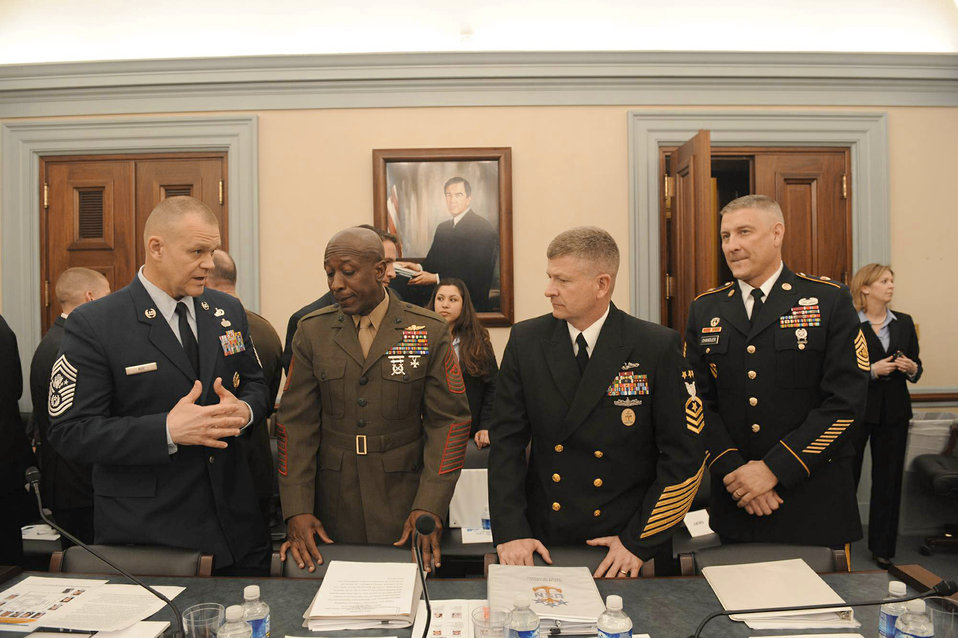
Chief Roy

The senior enlisted leaders from the Air Force, Marines, Navy and Army testify before the House Subcommittee for Military Construction, Veterans Affairs and Related Agencies March 30, 2011, in Washington. From left are Chief Master Sgt. of the Air Force James A. Roy, Sergeant Major of the Marine Corps Carlton Kent, Master Chief Petty Officer of the Navy Rick West and Sergeant Major of the Army Raymond Chandler.